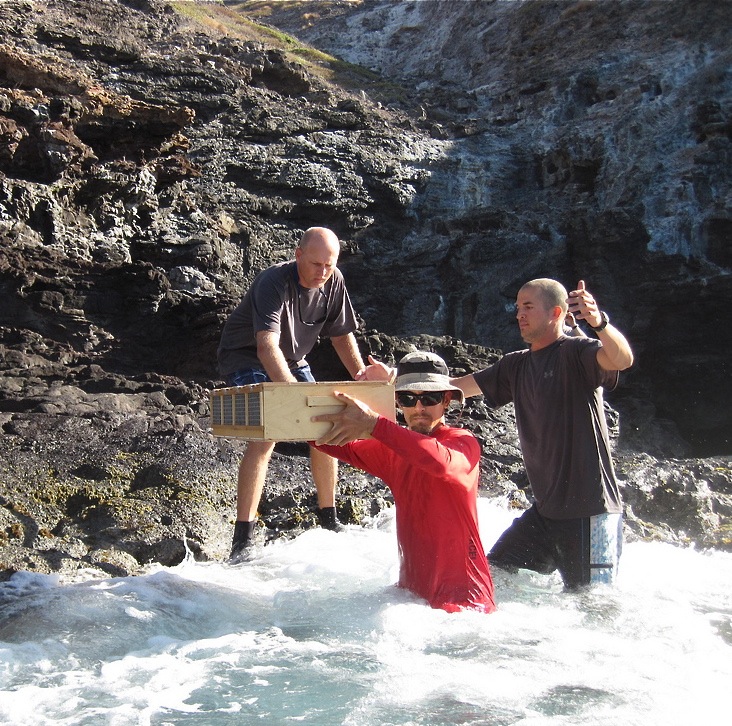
a tricky transfer

Hand-carrying captured millerbirds off Nihoa Island to a waiting Zodiac
Sept. 5, 2011